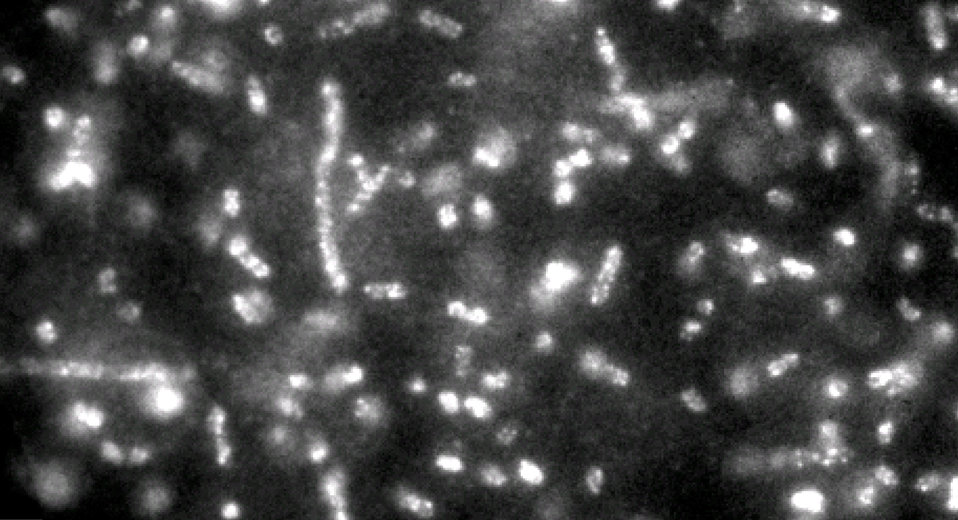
Identifying Bacteria with Quantum Dots

This fluorescence micrograph shows phage-quantum dot complexes (bright spots) bound to E. coli cells (cylindrical shapes). The NCI/NIST method of tagging cells with quantum dots can be used to identify bacteria much faster than conventional methods. The fluorescence signal is strong and stable for hours, enabling scientists to count the number of phage viruses bound to a cell.